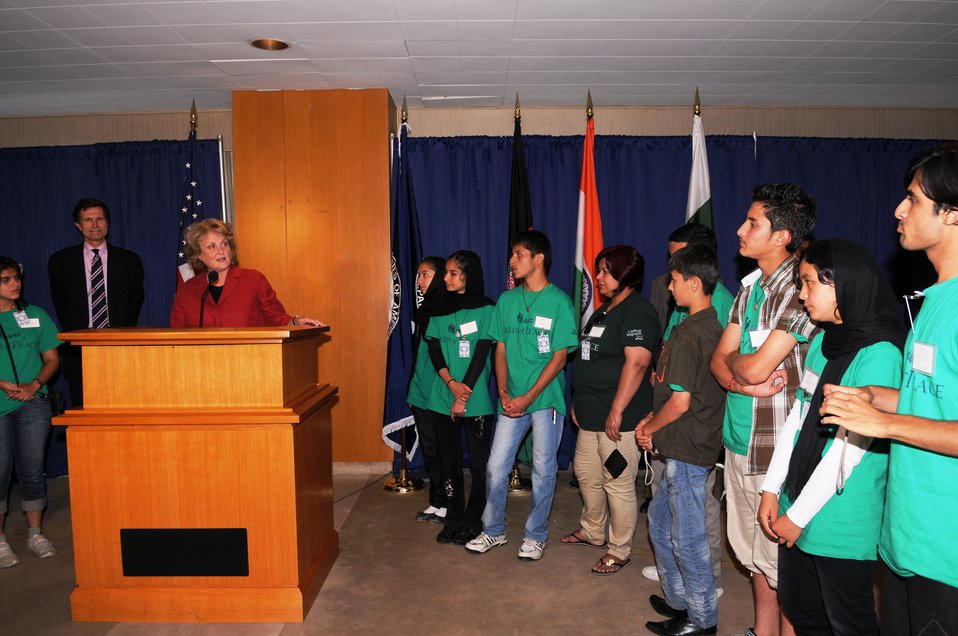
Under Secretary McHale Delivers Remarks

U.S. Under Secretary of State for Public Diplomacy and Public Affairs Judith McHale delivers remarks at the Seeds of Peace reception at the U.S. Department of State in Washington, D.C., on July 14, 2010.